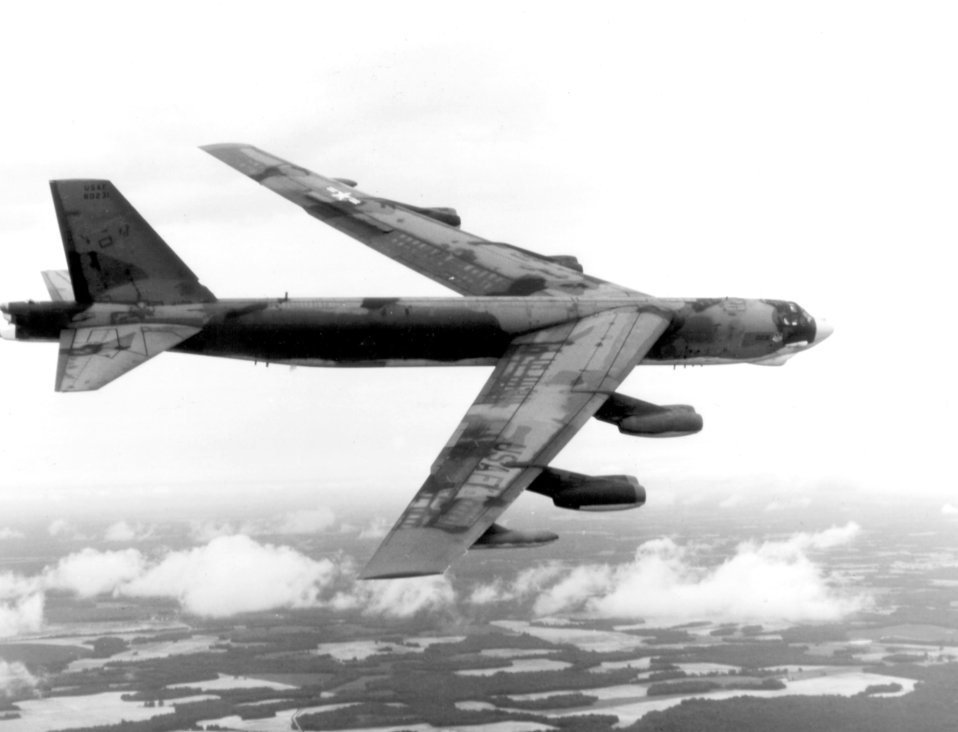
B-52G

1970's -- A B-52G Stratofortress banks to the right near Seymour Johnson AFB, N.C., during Global Shield 79. The exercise was the largest and most comprehensive Strategic Air Command exercise in more than 20 years, and was launched worldwide in July 1979.